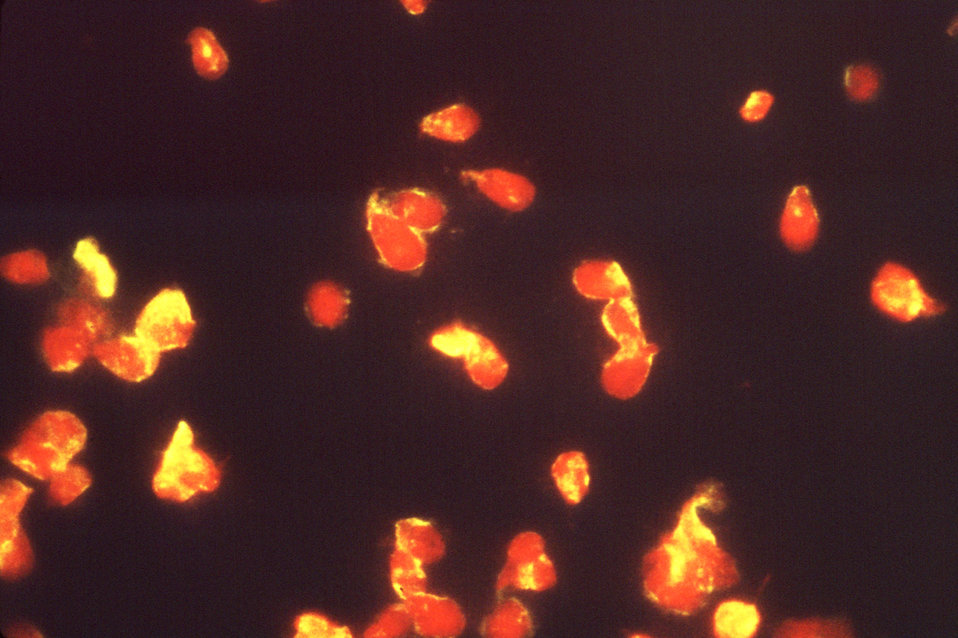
This photomicrograph depicts Giardia lamblia parasites using indirect immunofluorescence test for giardiasis.